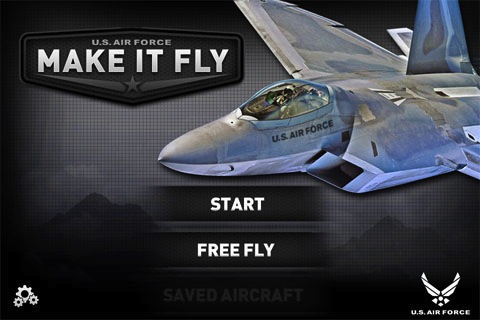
Make-It-Fly

A screenshot from the Air Force's Make-It-Fly mobile app.